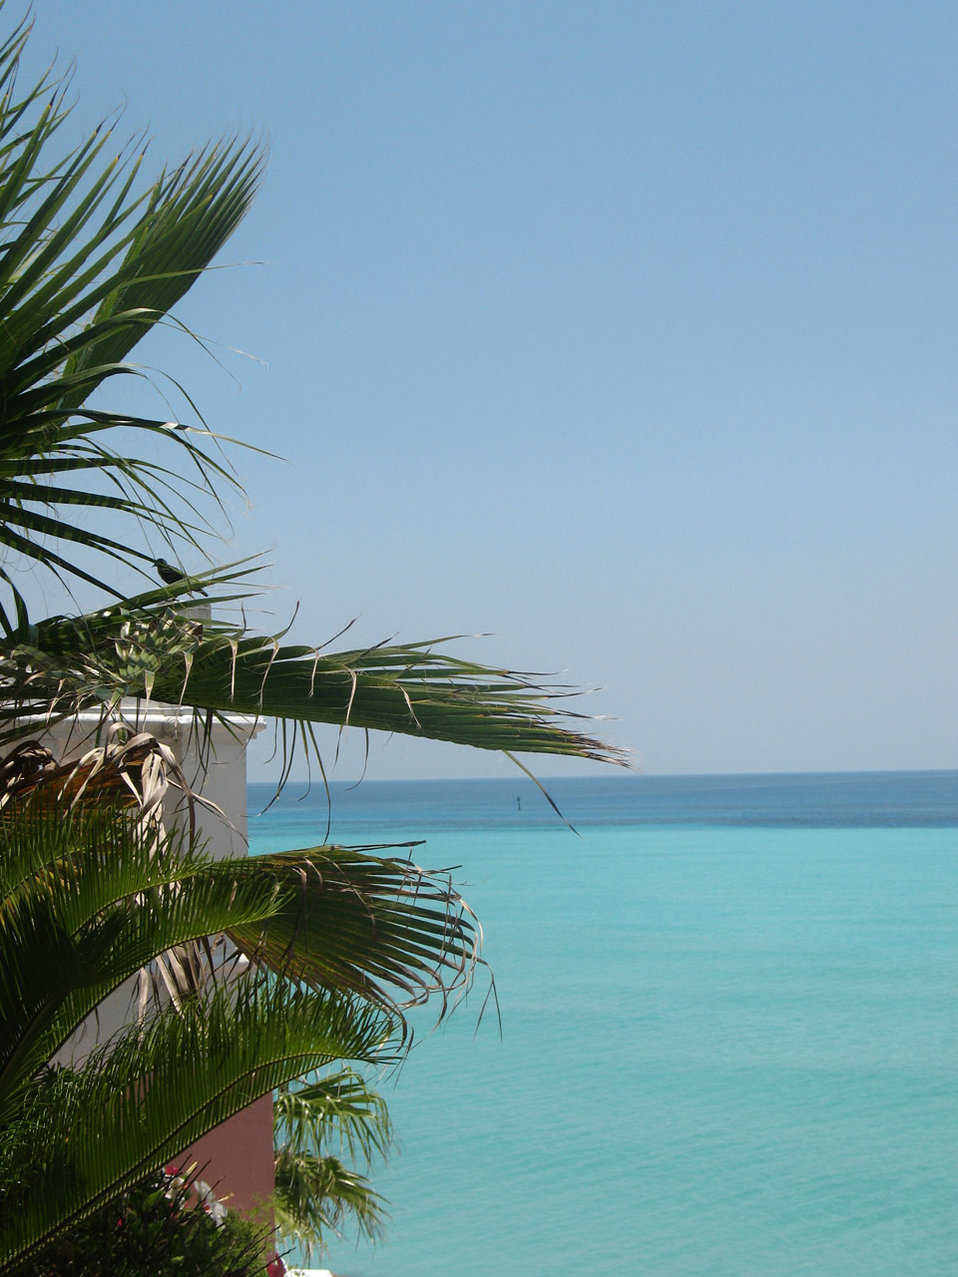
The ocean bermuda

Evergreen, ocean, beautiful.